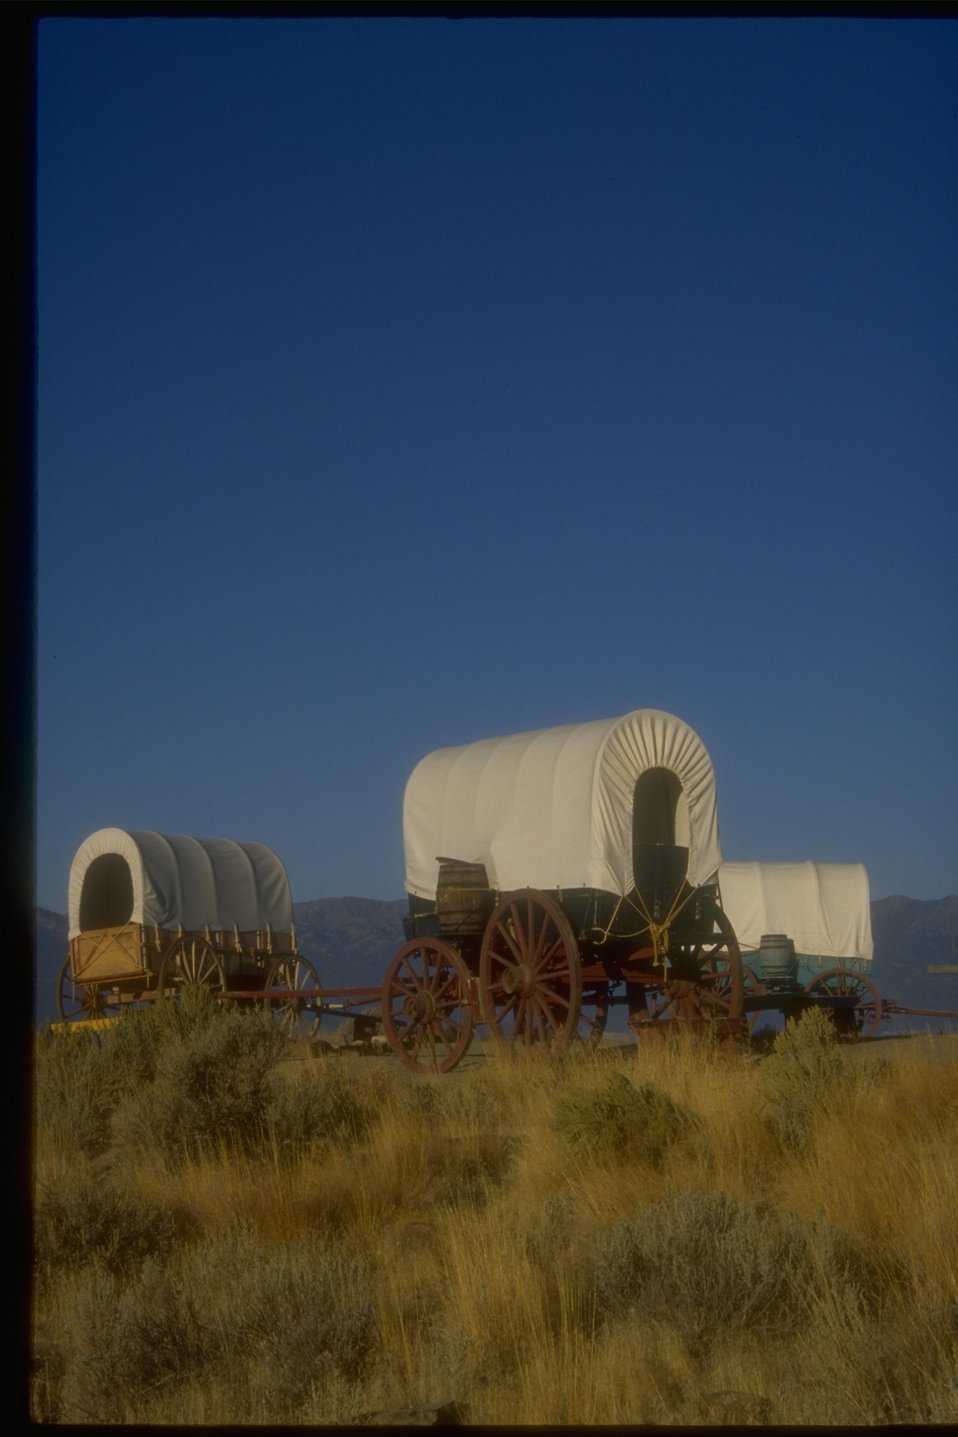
Covered Wagons at encampment at NHOTIC